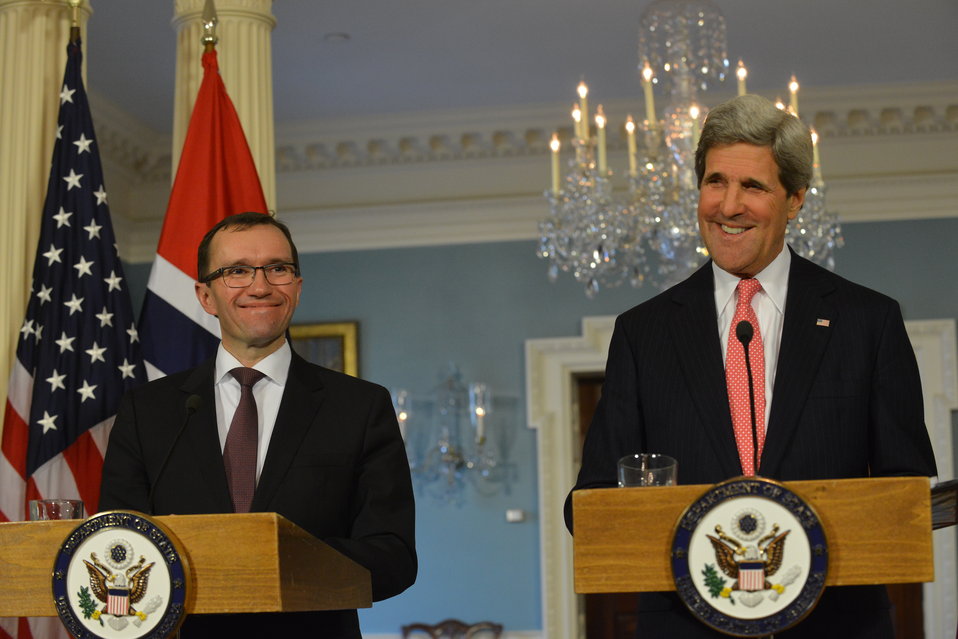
Secretary Kerry and Norwegian Foreign Minister Espen Barth Eide Address Reporters

U.S. Secretary of State John Kerry and Norwegian Foreign Minister Espen Barth Eide address reporters after their bilateral meeting at the U.S. Department of State in Washington, D.C., on March 12, 2013.